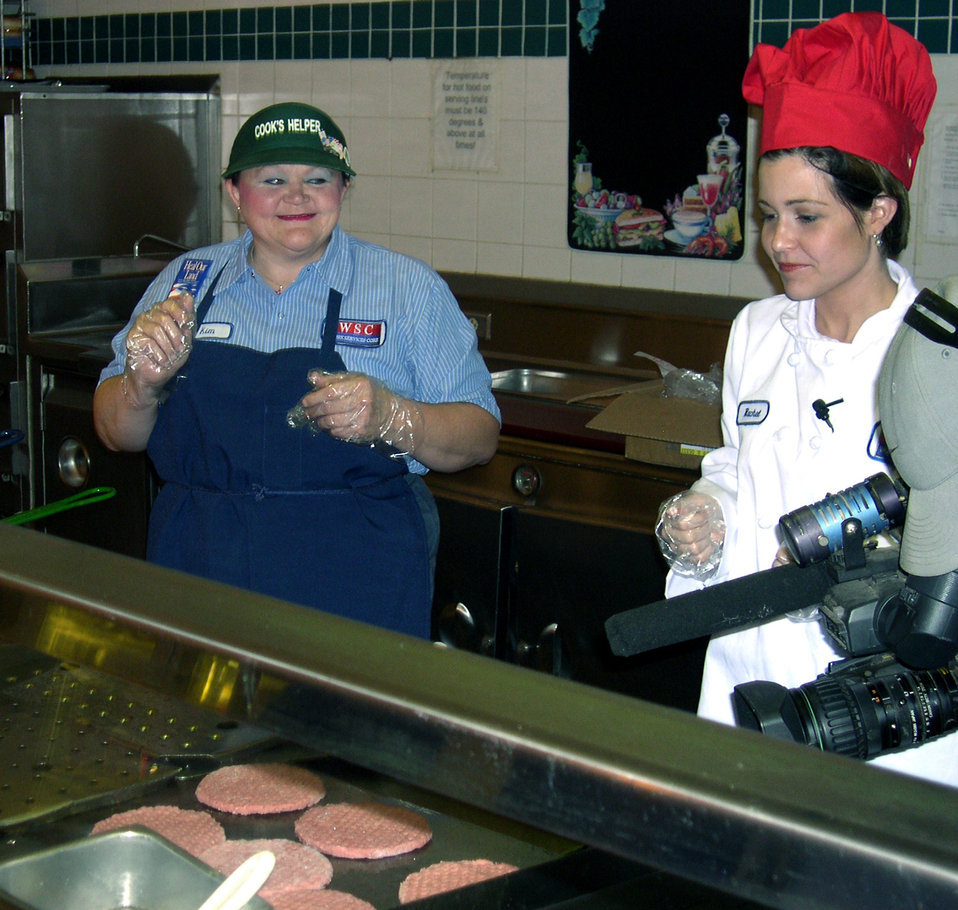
Swapping jobs

SHEPPARD AIR FORCE BASE, Texas -- Kimbra Lyons (left) works the grill at the 360th Training Squadron's dining facility with Rachel Wheat. Ms. Wheat is a reporter and